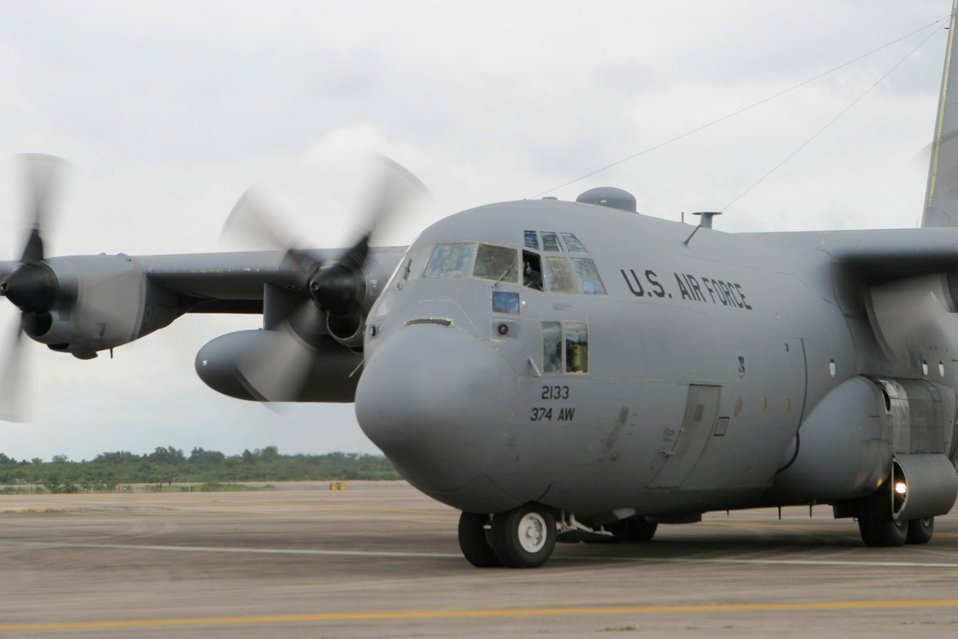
Airmen support Burma relief effort

A C-130 Hercules stocked with supplies prepares to take off May 12 from Utapao Air Base, Thailand. The aircraft flew to Burma as part of Joint Task Force Caring Response, the joint humanitarian assistance and disaster relief response to Tropical Cyclone Nagris.